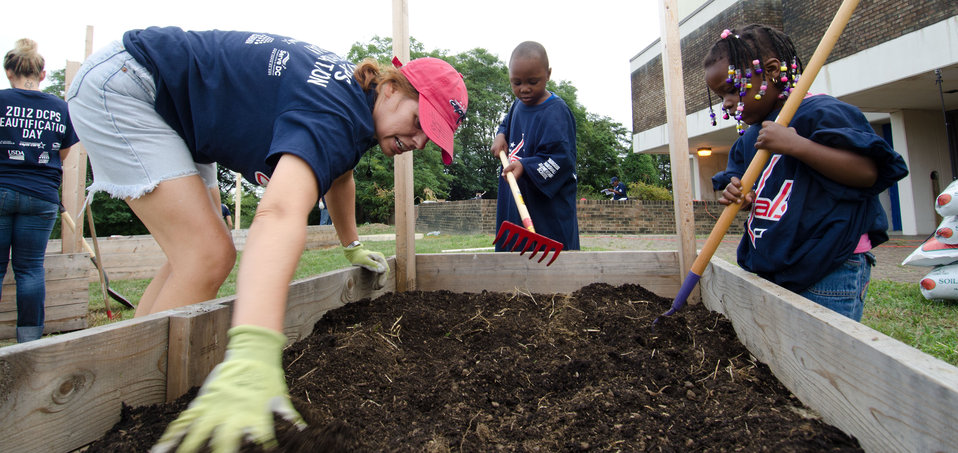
Ellen Anderson guides two young gardeners as thet mix potting and conditioning soil in a raised planter box, when U.S. Department of Agriculture (USDA) People’s Garden Executive Master Gardeners, friends, and family, along with Washington Capitals fans volunteer in the District of Columbia Public Schools’ (DCPS) Beautification Day, on Saturday, August 25, 2012, at Thurgood Marshall Elementary School, in Washington, D.C. Each year people are invited to help “spruce up” public school facilities in preparation for the first day of school. More the 70 volunteers pitched in at this large school facility. The People’s Garden effort involves building and painting raised planter boxes, then preparing the soil mixture so they are “ready to grow.” Additionally, a team that includes descendants of U.S. Supreme Court Justice Thurgood Marshall assembles a prefabricated garden toolshed. The Justice’s son, John Marshall leads the team, which includes Brianna the Justice’s great-grand daughter in one of many multi-generational efforts at this school today. Washington Capitals Forward Mike Riberio, his family and mascot Slapshot participated in every project underway at Marshall School. From the outside gardens, to inside murals, and robotics worktable construction, the teams made their goals.